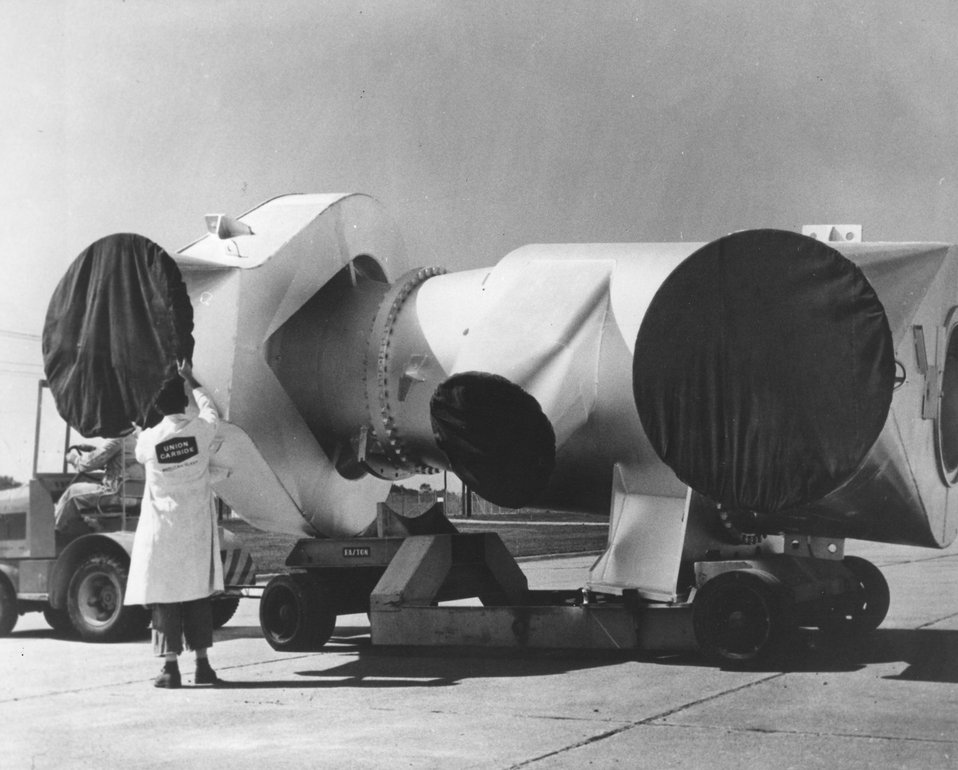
Part of the Process Equipment Modification Project is the improvement of the compressor discharge nozzle, such as this one at the Energy Research and Development Administration's Paducah Gaseous Diffusion Plant. c. 1975